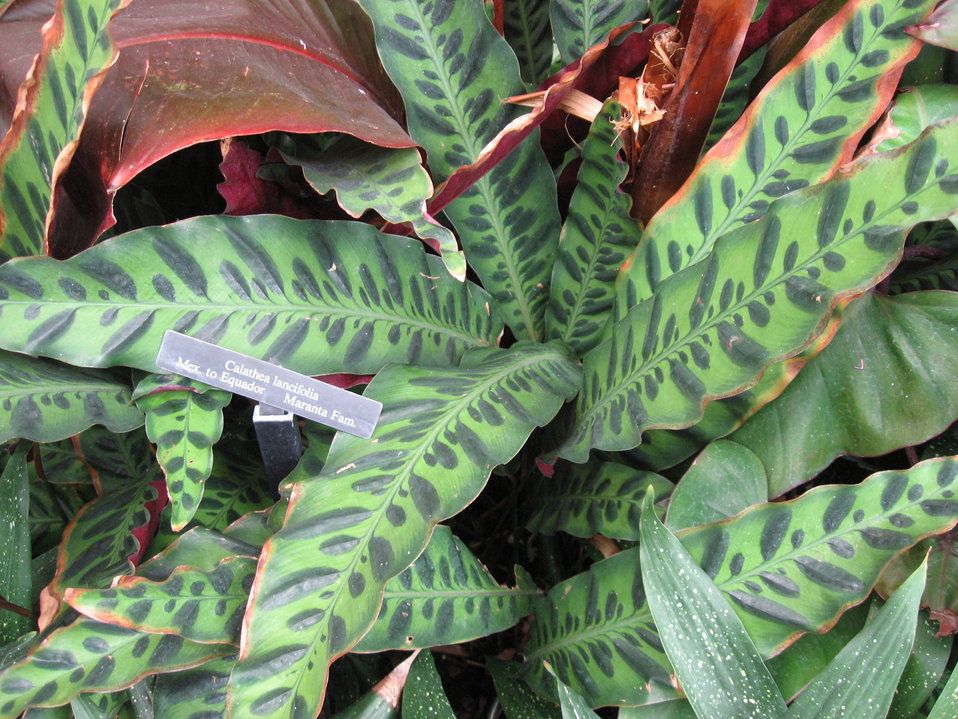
A picture of Calathea lancifolia.